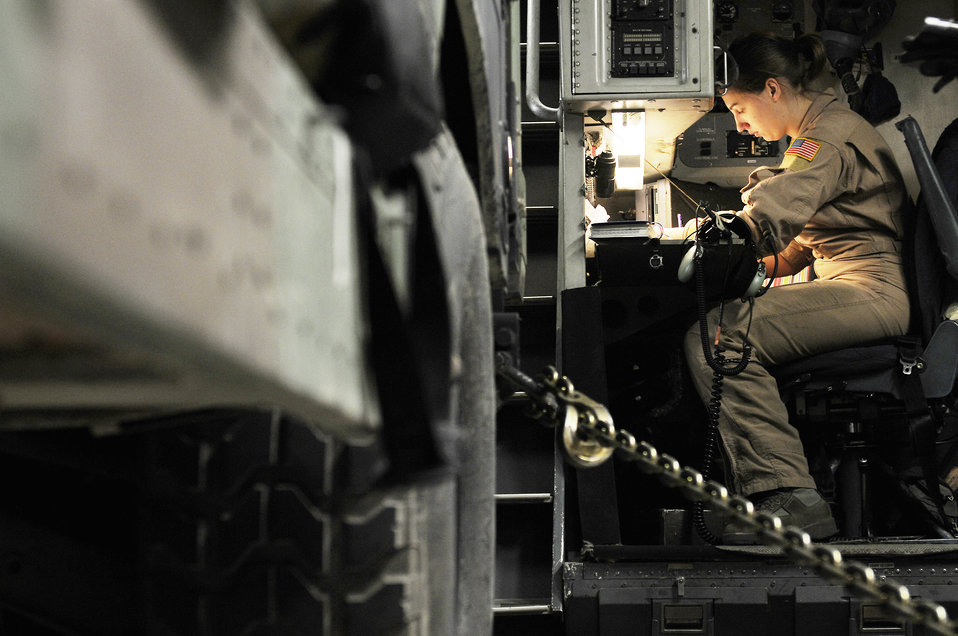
Working into the night

Senior Airman Carrie Symons works at the loadmaster station on a C-17 Globemaster III April 2, 2010, at Ramstein Air Base, Germany. The loadmaster performs the calculations and plans cargo and passenger placement in the aircraft. Airman Symons is a loadmaster with the 4th Airlift Squadron at McChord Air Force Base, Wash.